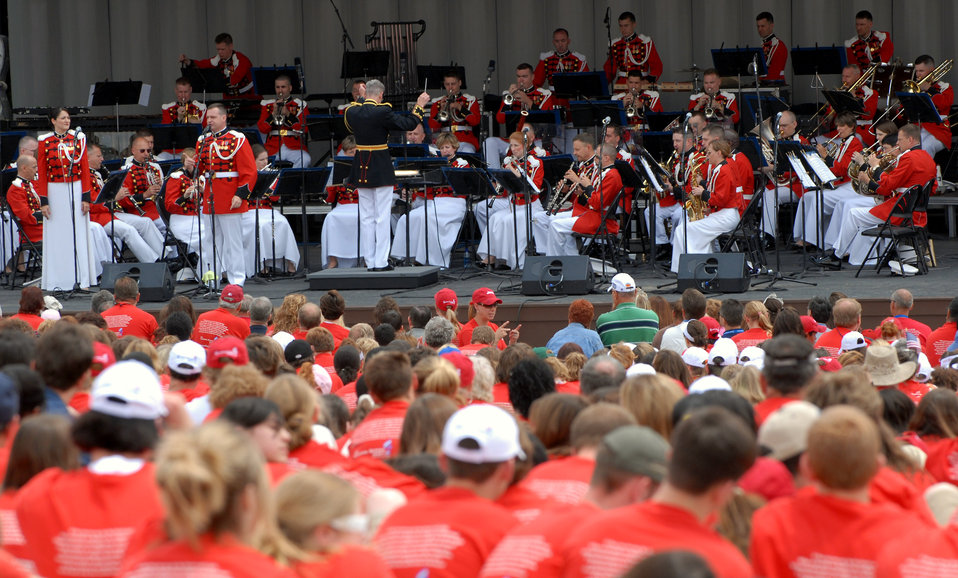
National Anthem Project concludes

Thousands of school children listen to the